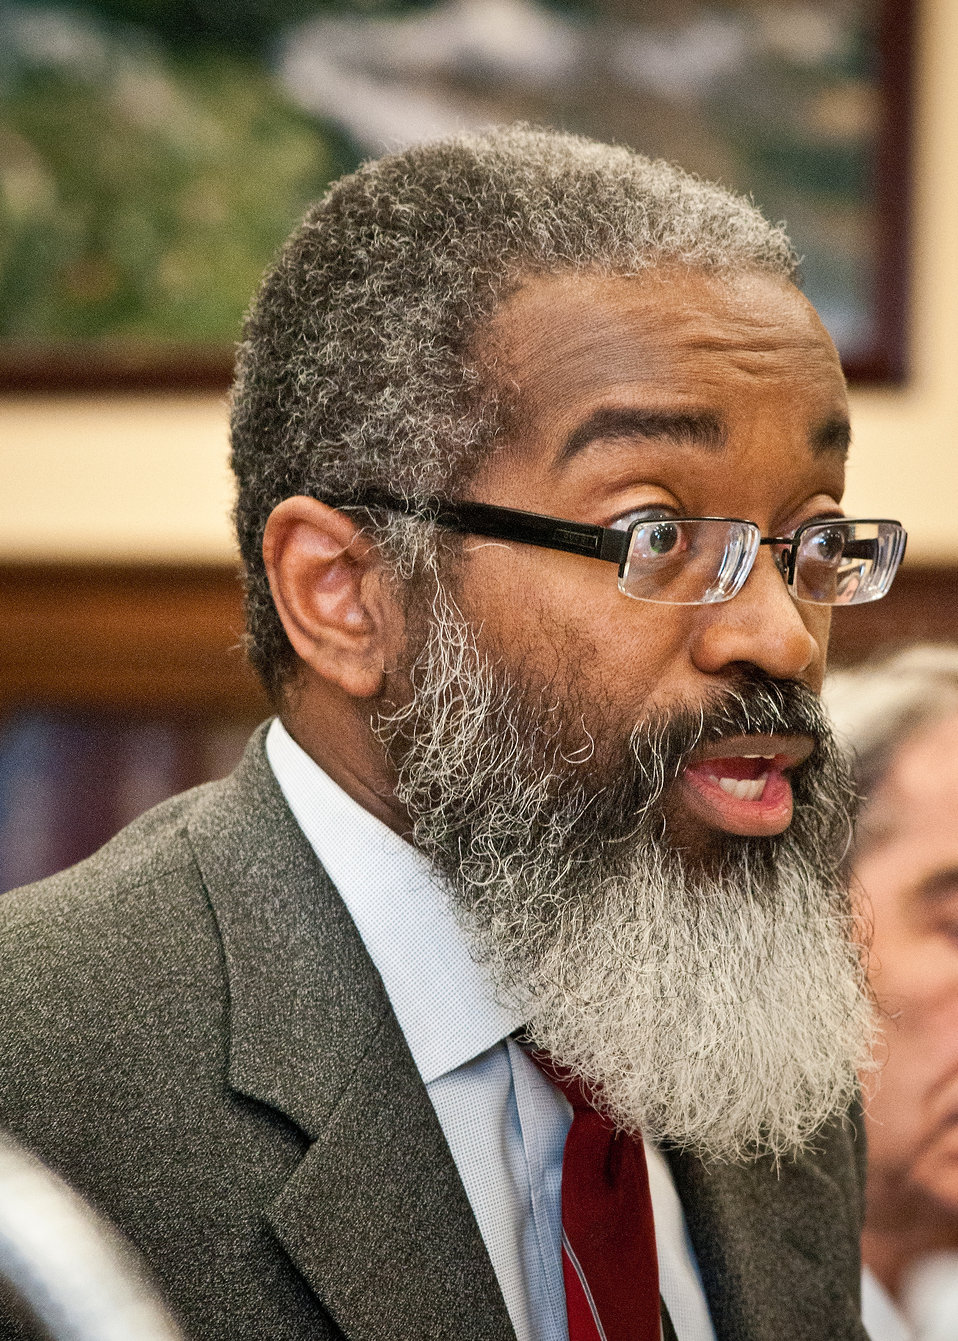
Dr. Gregory Parham, Administrator, Animal and Plant Health Inspection Service answers a questions while testifying on Capitol Hill with Ed Avalos, Undersecretary Marketing and Regulatory Programs and representatives of the Marketing and Regulatory Program agencies before the House Agriculture Appropriations Subcommittee on the agencies fiscal year 2013 budget requests in Washington, D.C., Tuesday, March 6, 2012.